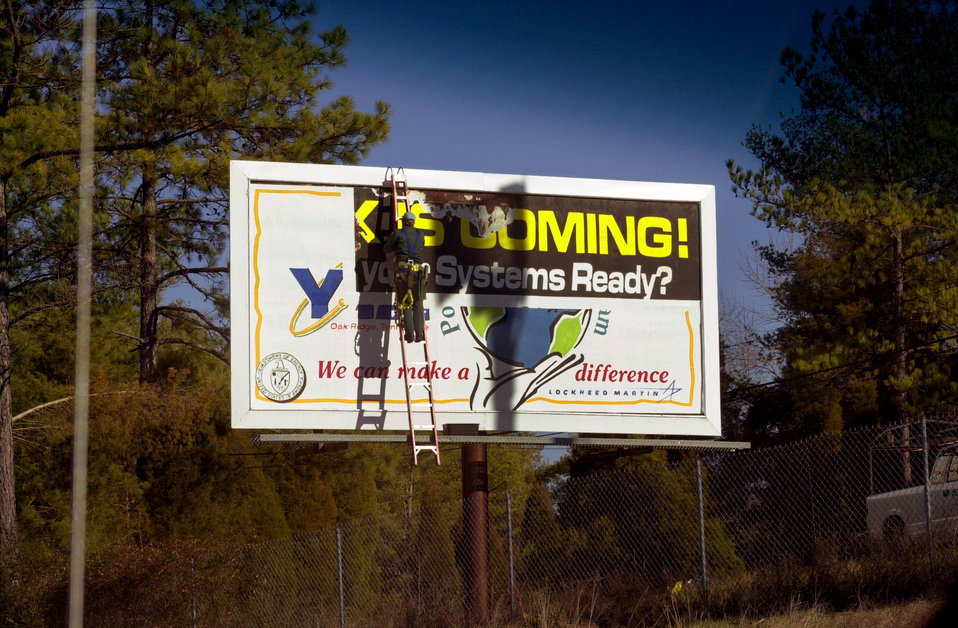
Y-12 Bill board Oak Ridge

00-0002-38 DOE photo by Lynn Freeny
Y-12 Bill board Oak Ridge Tennessee Jan. 2000